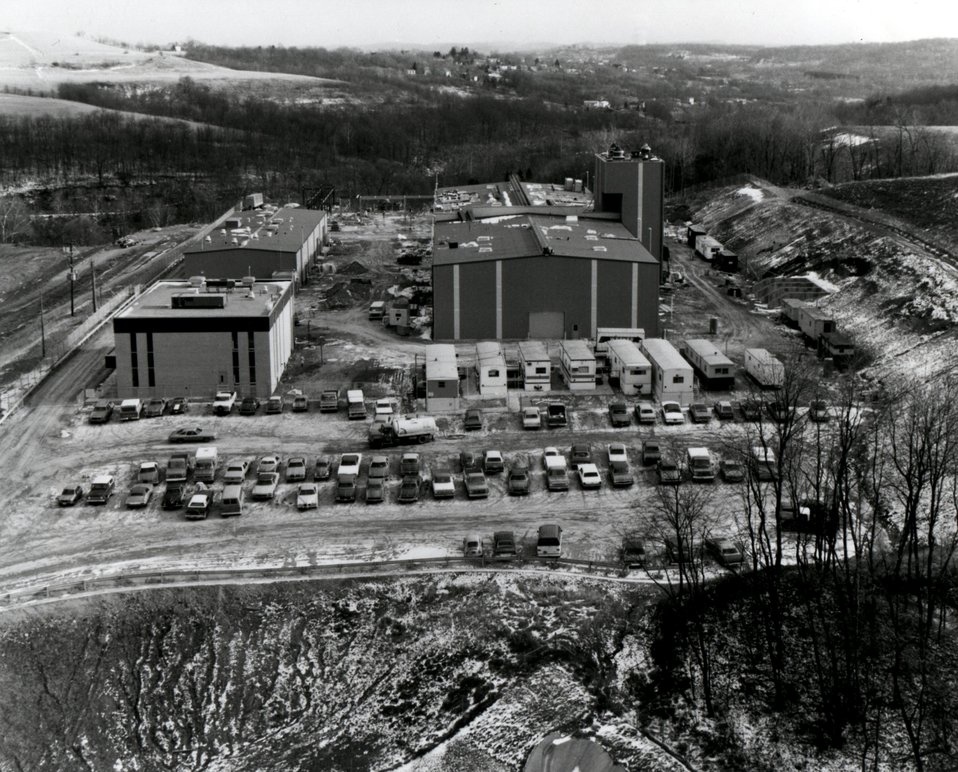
A Process Development Unit, called Synthoil, will be completed and begin operation later this year at DOE's Pittsburgh Energy Research Center. Circa 1977.